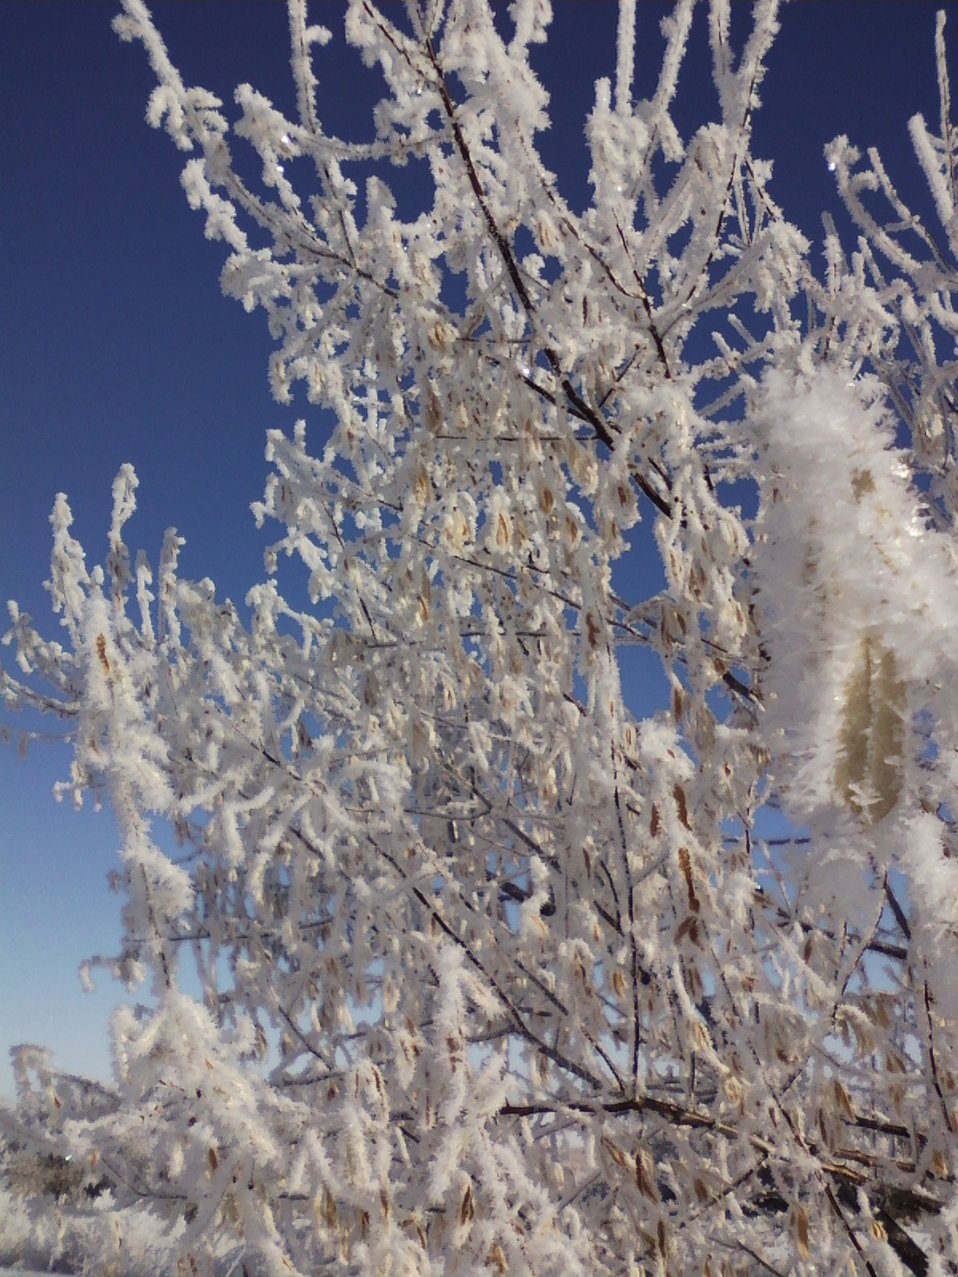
Frosty Morning on Bowdoin NWR

Hoarfrost is a common occurrence throughout the winter months on Bowdoin NWR.